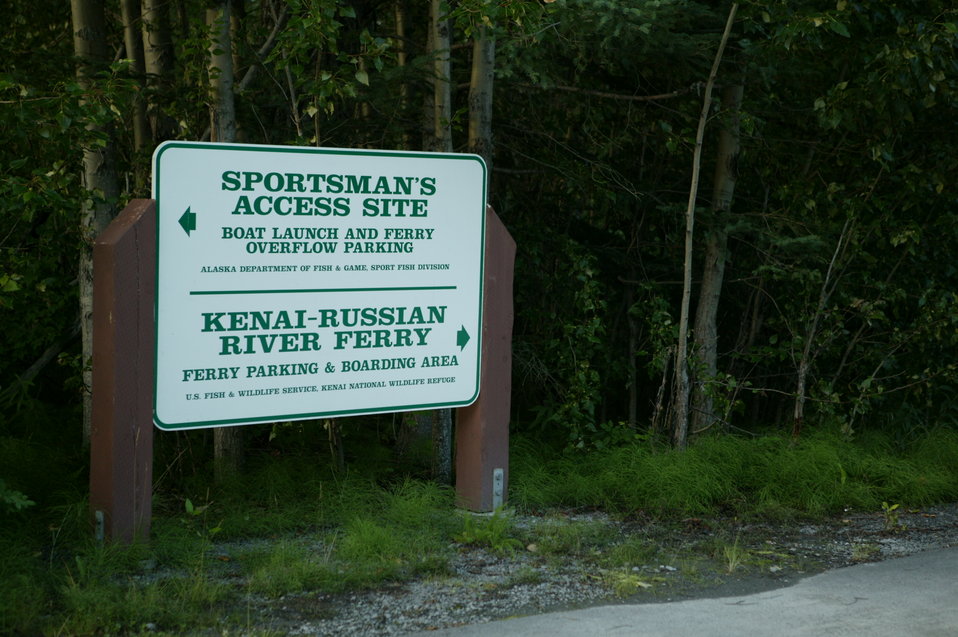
Russian River Ferry

The Russian River joins the Kenai River near Cooper Landing, Alaska. The area is one of the most heavily visited in the state when the red (sockeye) salmon are running. During the peak of the runs there can be several thousand anglers lining the banks casting Russian River Flies trying to entice the reds into biting at them.